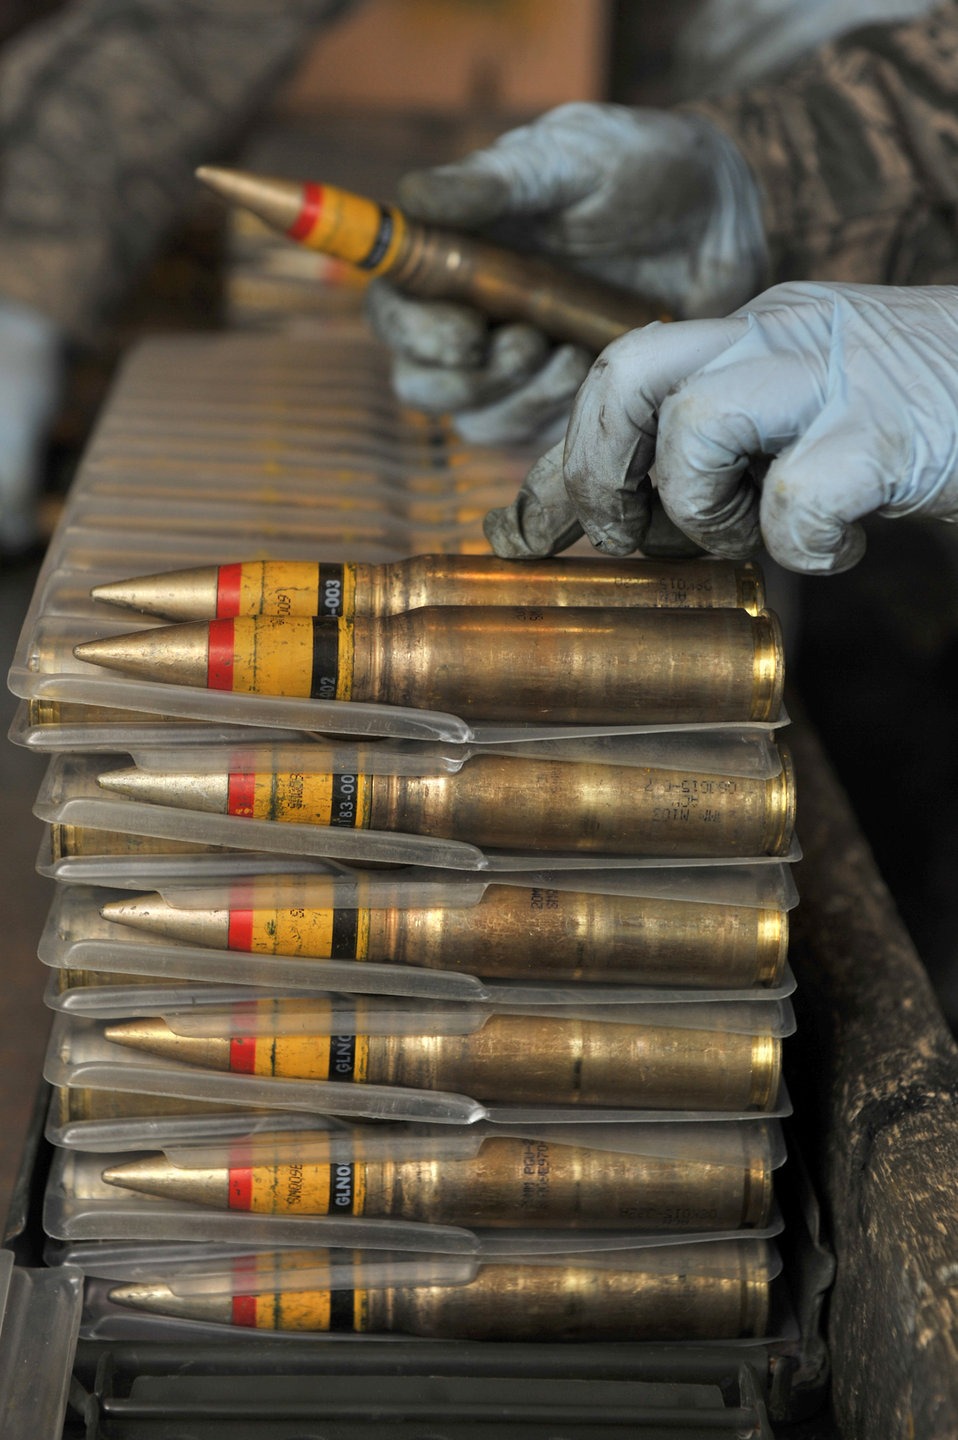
Ammo airmen supply the fight

A member from the 455th Expeditionary Maintenance Squadron Ammunition Supply Point inspects 20 millimeter rounds March 23, 2011, at Bagram Airfield, Afghanistan.